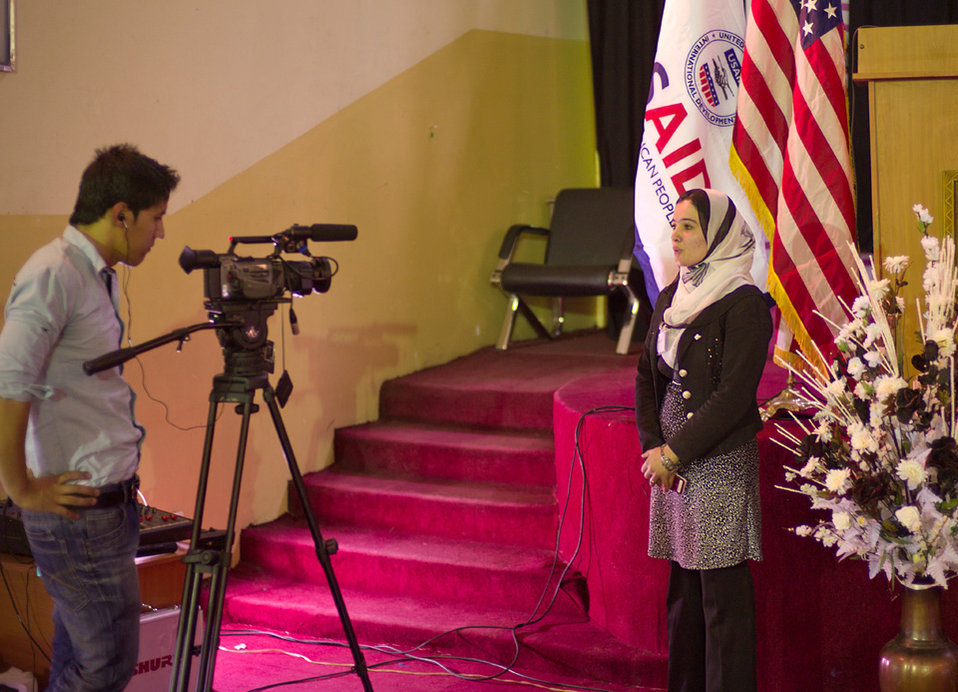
Interview in front of the US:USAID Flags